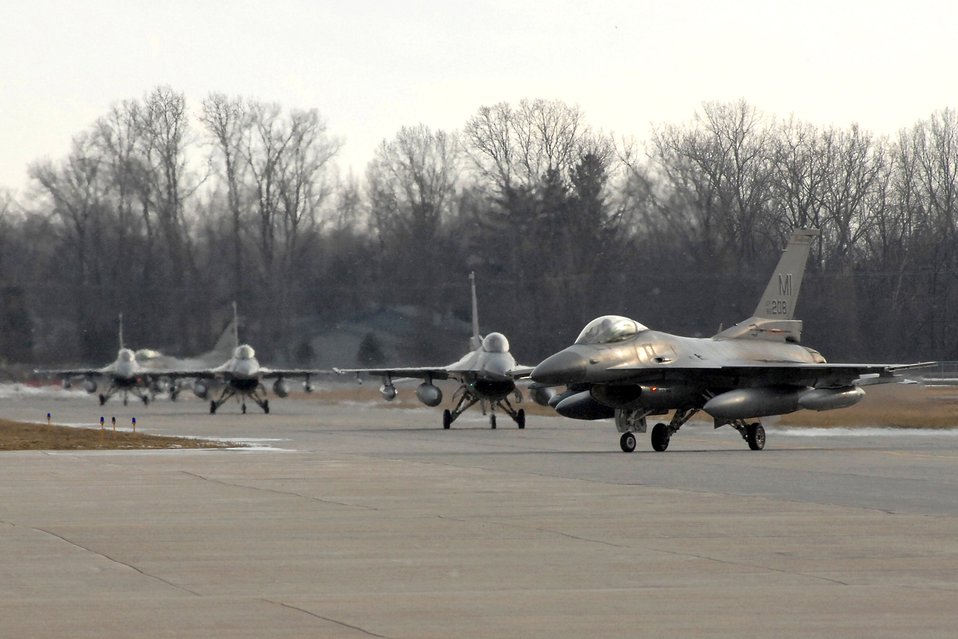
Michigan Air Guard returns from Iraq deployment

Twelve F-16 Fighting Falcons from the 127th Wing returned March 2 to Selfridge Air National Guard Base in Michigan after serving in support of Operation Iraqi Freedom. Approximately 250 members of the Michigan Air National Guard's 127th Wing were deployed to Balad Air Base, Iraq.